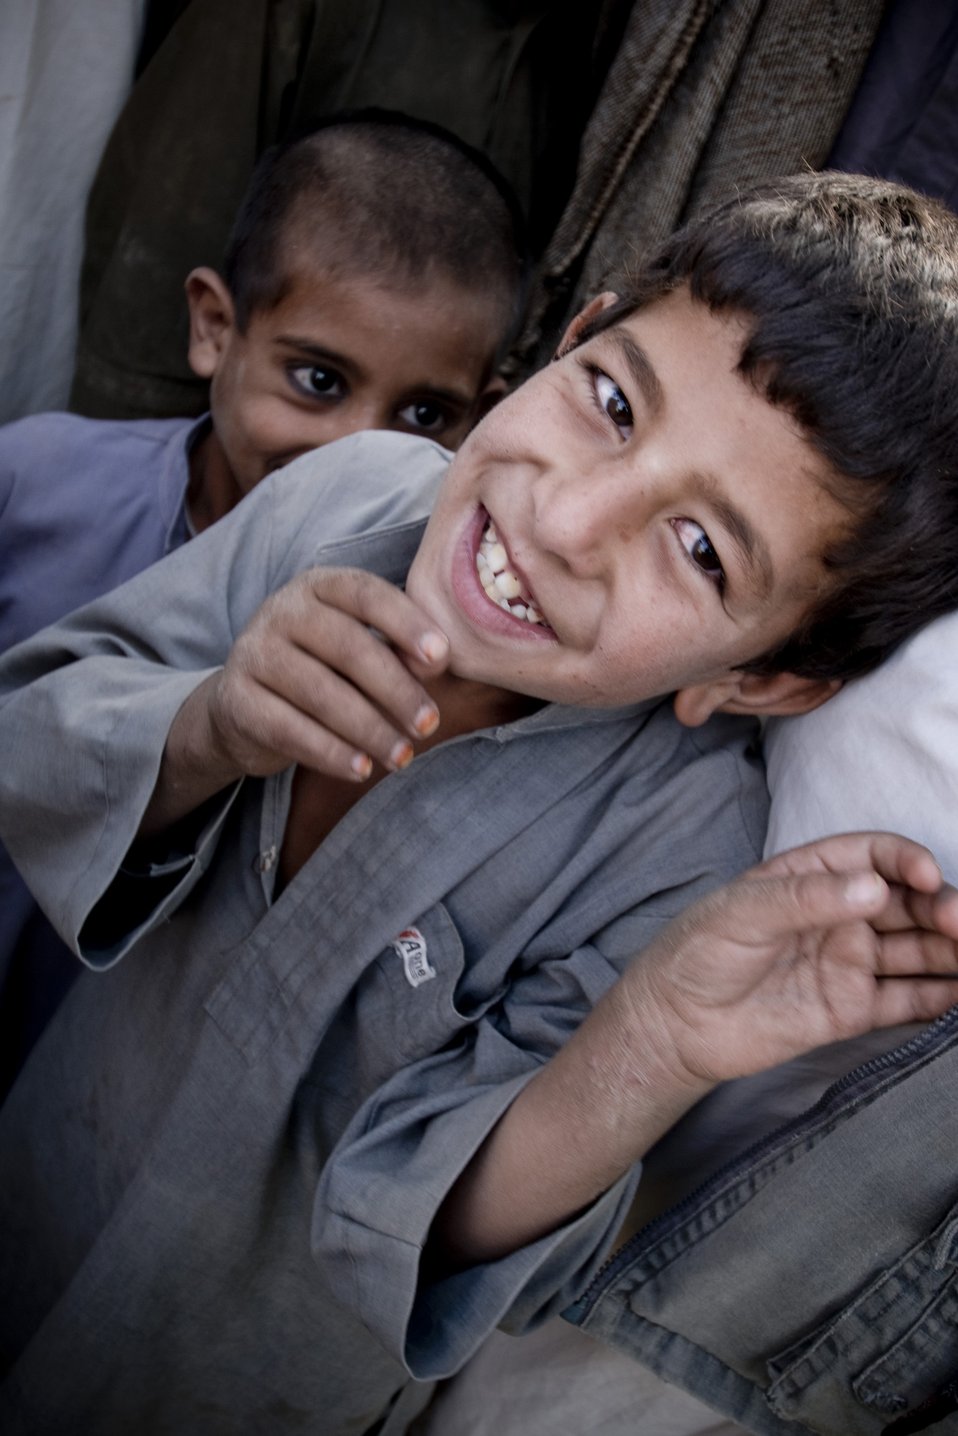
Village visit

A boy looks up at the camera in an Afghan village. The children smiled at the sight of coalition forces despite the continuing food shortages and violence in Afghanistan.